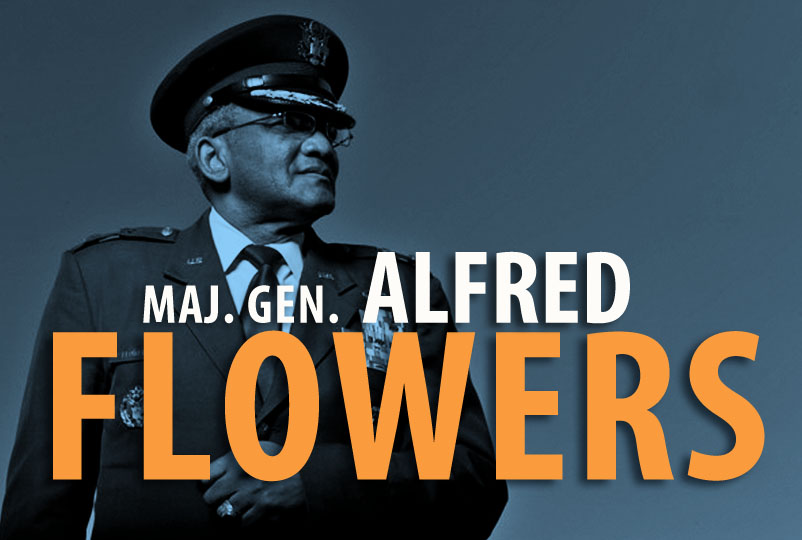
Maj. Gen. Alfred Flowers